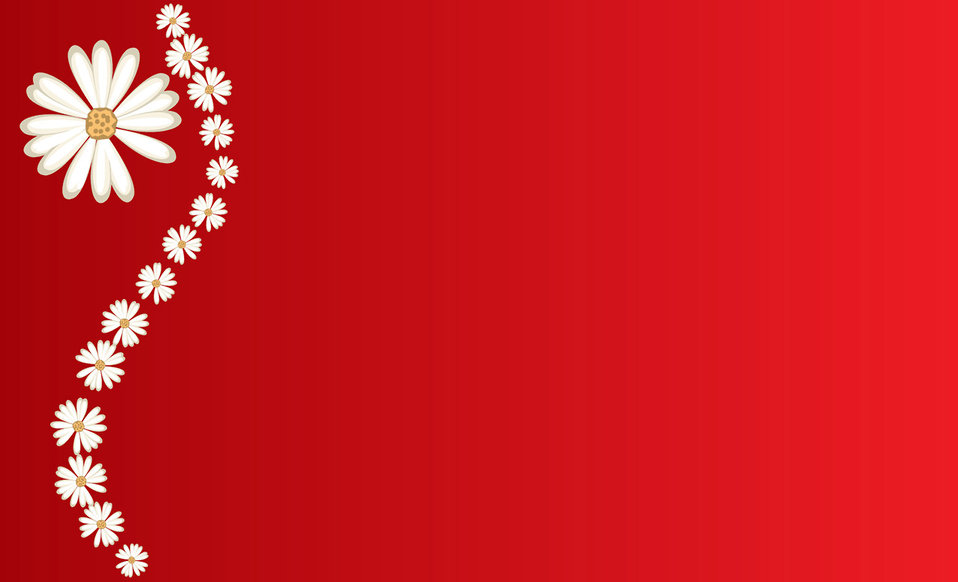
Daisies on red background

Daisies on a red background.